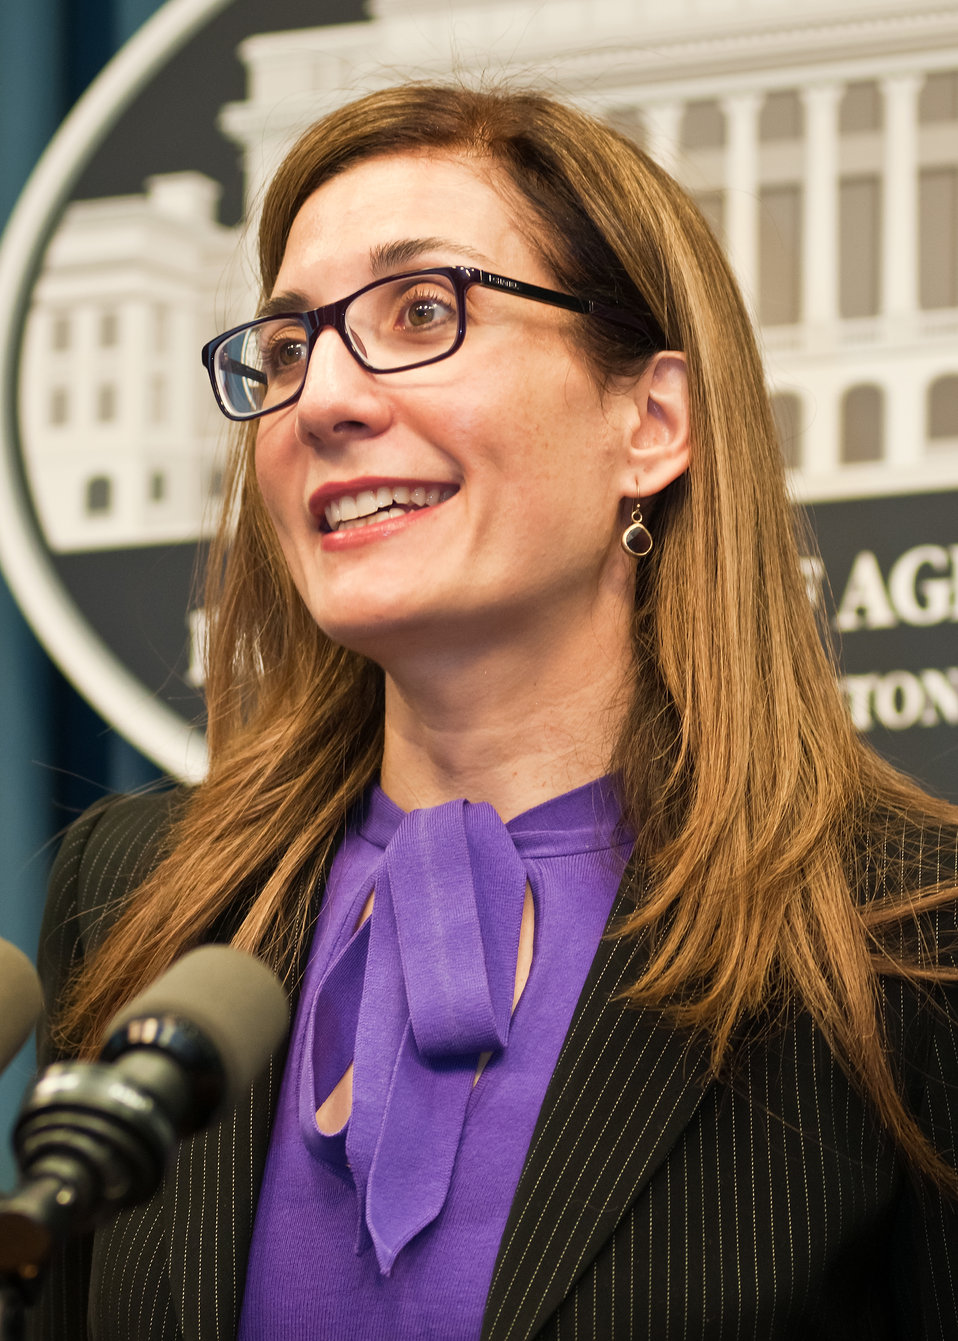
Agriculture Deputy Administrator of the Supplemental Nutrition Assistance Program (SNAP), Food and Nutrition Service (FNS) Lisa Pino was the keynote speaker at the United States Department of Agriculture (USDA) Hispanic Association of Colleges and University (HACU) summer interns during the USDA/HACU/Tribal College summer intern orientation at USDA in Washington, DC, Monday, Jun. 6, 2011. Ms. Pino is a past member of the a government wide HACU intern program and gave the students and graduates advice on her experience and guidance on how to make their experience as valuable as hers. The HACU/Tribal College National Internship Program represents more than 400 colleges and universities committed to higher education in the U.S., Puerto Rico, Latin America, Spain and Portugal and places student interns each year with federal agencies in Washington, DC or in field offices around the country.